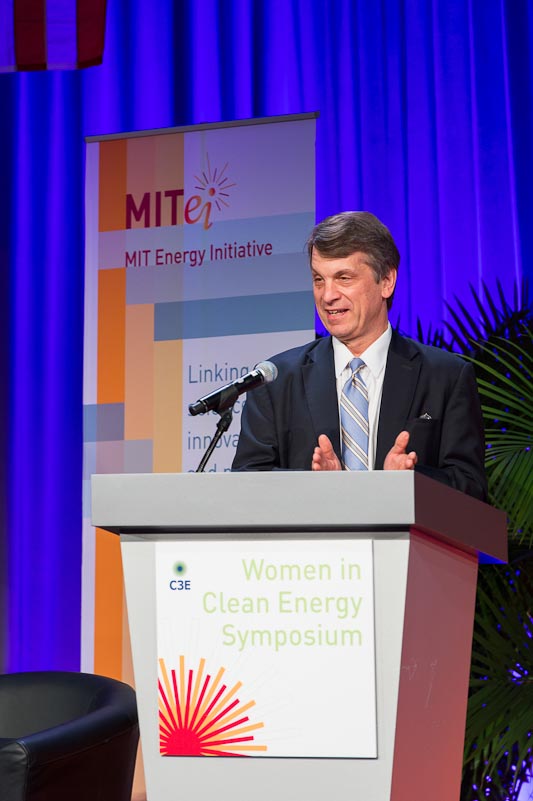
David Sandalow, Acting Under Secretary of the U.S. Energy Department